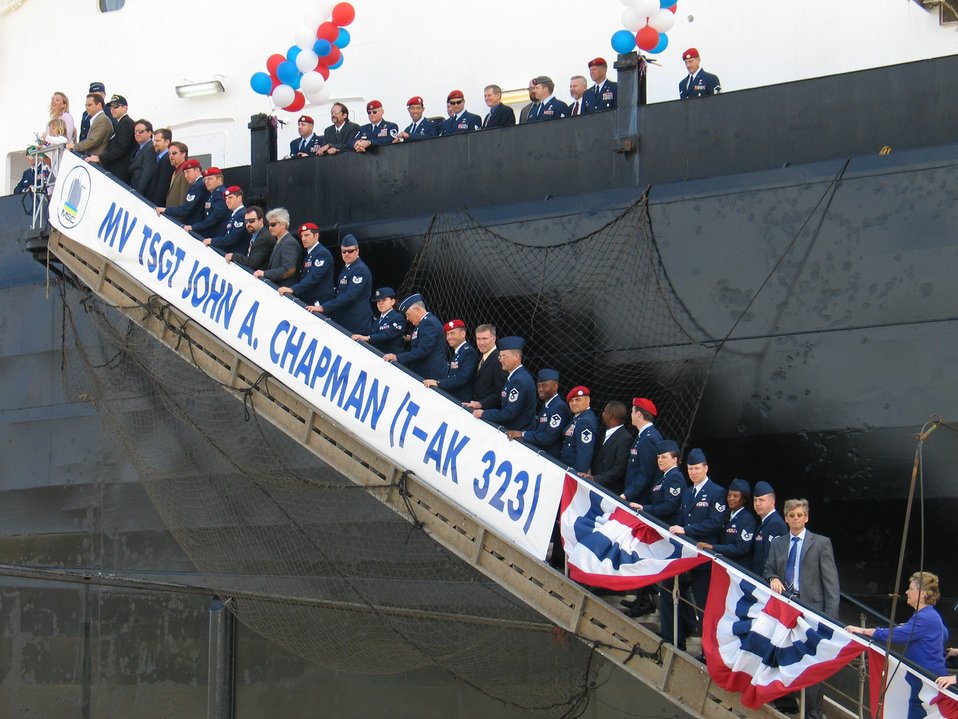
Ship takes heroic legacy to the fight

SUNNY POINT, N.C. -- Members of the special operations community join Gen. John P. Jumper, Valerie Chapman and her family on the gangplank of the MV Tech. Sgt. John A. Chapman here April 8 after the renaming of the ship.